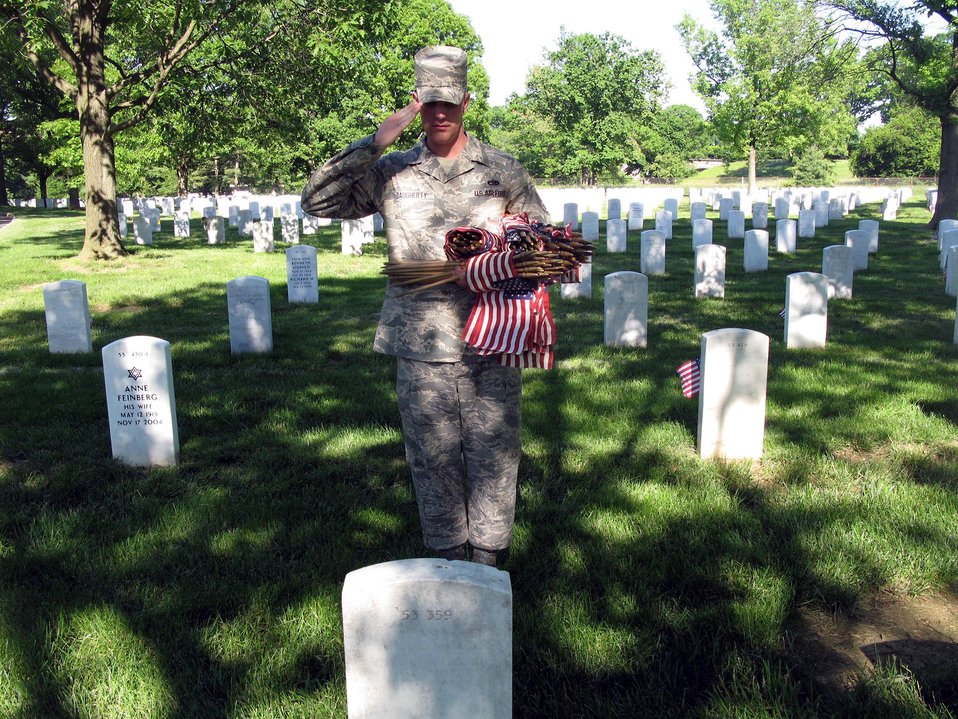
Arlington 'Flags In' tribute begins Memorial Day commemoration

Airman Jacob Proffer, a member of the Air Force Honor Guard, pauses to salute a grave after placing a miniature flag at its base during the